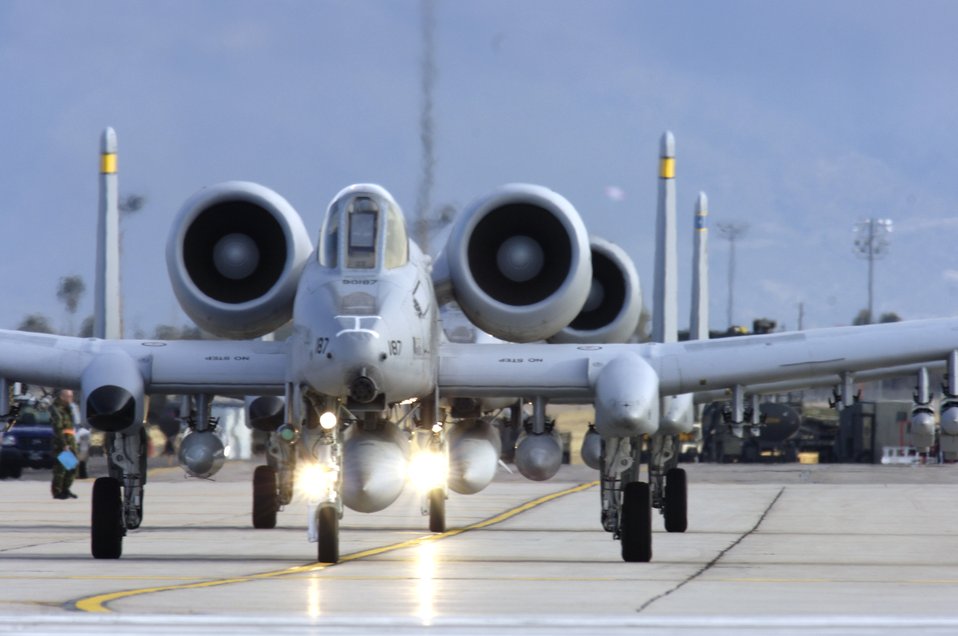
Bushwhacker tests wing

Pilots from the 354th Fighter Squadron taxi down the tarmac preparing to take off in their A-10 Thunderbolt IIs to a simulated deployed location as a part of Bushwhacker 07-02 Jan. 21at Davis-Monthan Air Force Base, Ariz. Bushwacker 07-02 is an operational readiness exercise that tests the 355th Wing's ability to prepare deploy.